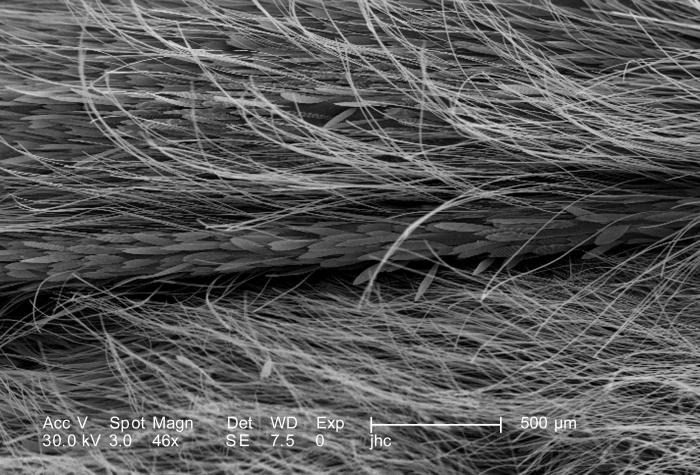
Under a low magnification of 46X, this scanning electron micrograph (SEM) revealed some of the ultrastructural morphology located on the head region of an unidentified white moth, which had been found deceased on the ground in the suburbs of Decatur, Georgia. In this particular view, what appears to be wavy, wind-blown grass, is actually a tuft of exoskeletal sensorial 'hairs' known as 'setae', located atop the insect's head. You'll also note the rows of 'scales' buried amongst the setae. Both the scales and setae are composed of the same chitinous material.